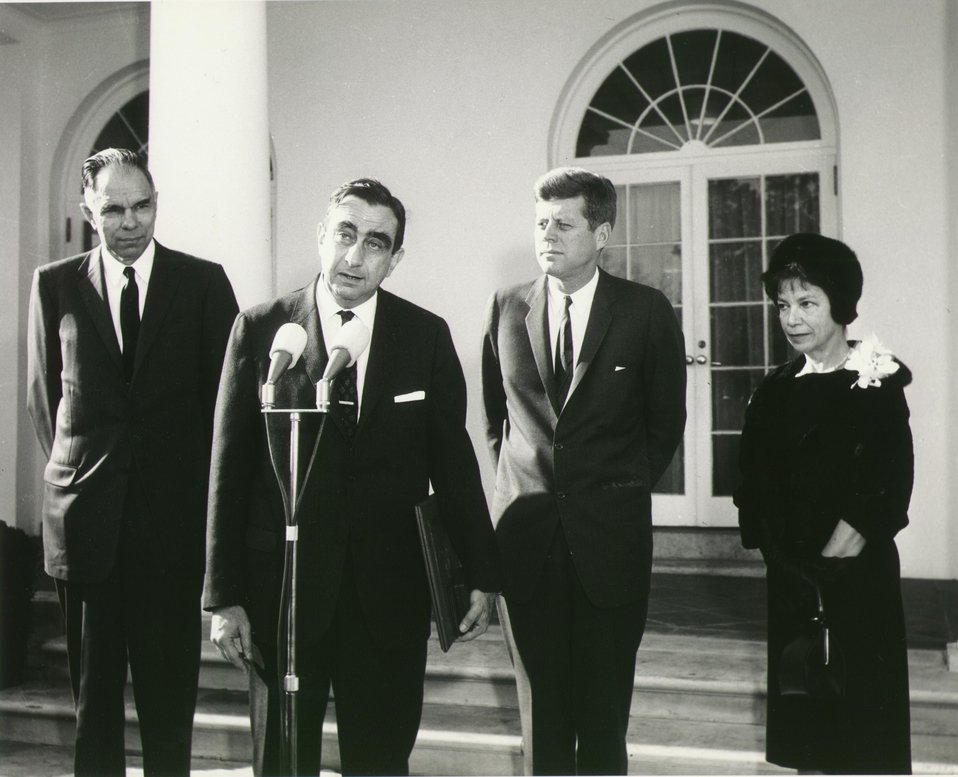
Fermi Award Ceremony for Teller in 1962.